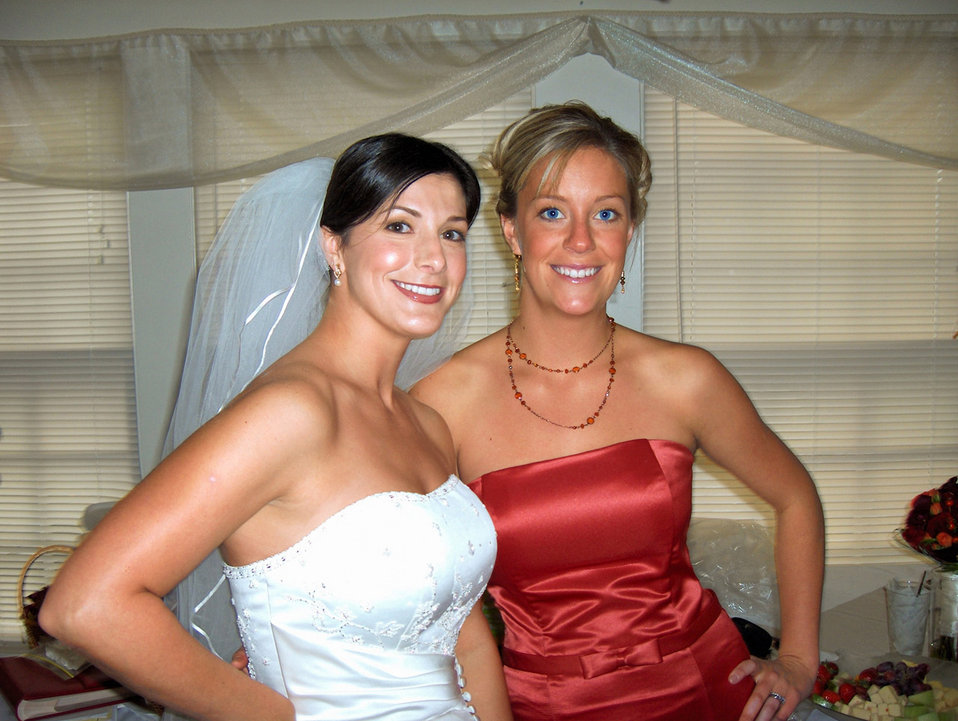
Bride

Beautiful brunette bride.